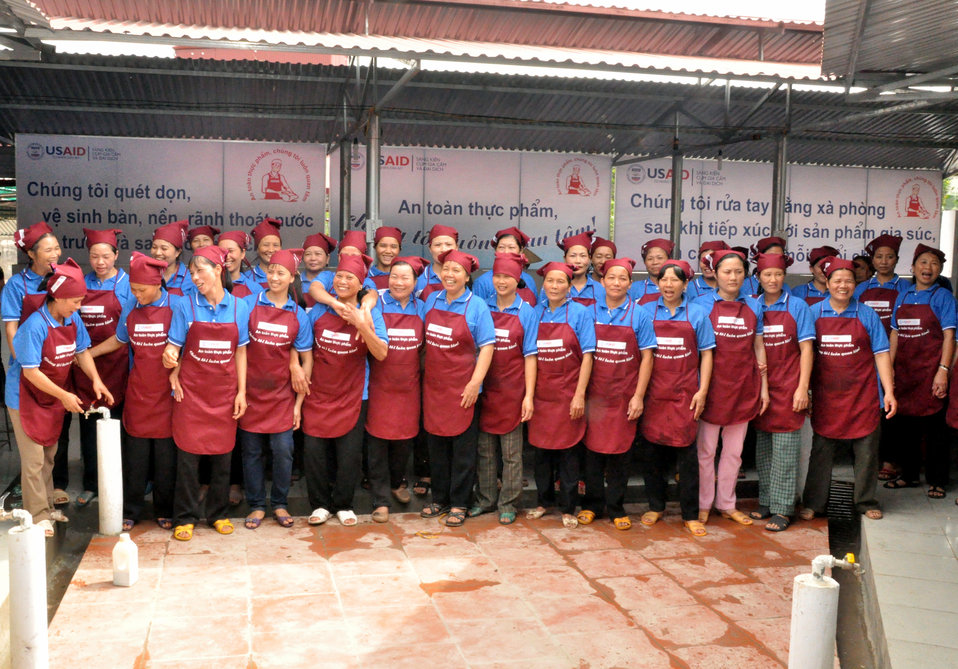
Handover Ceremony Hoa Mac Market Ha Nam

October 26, 2012